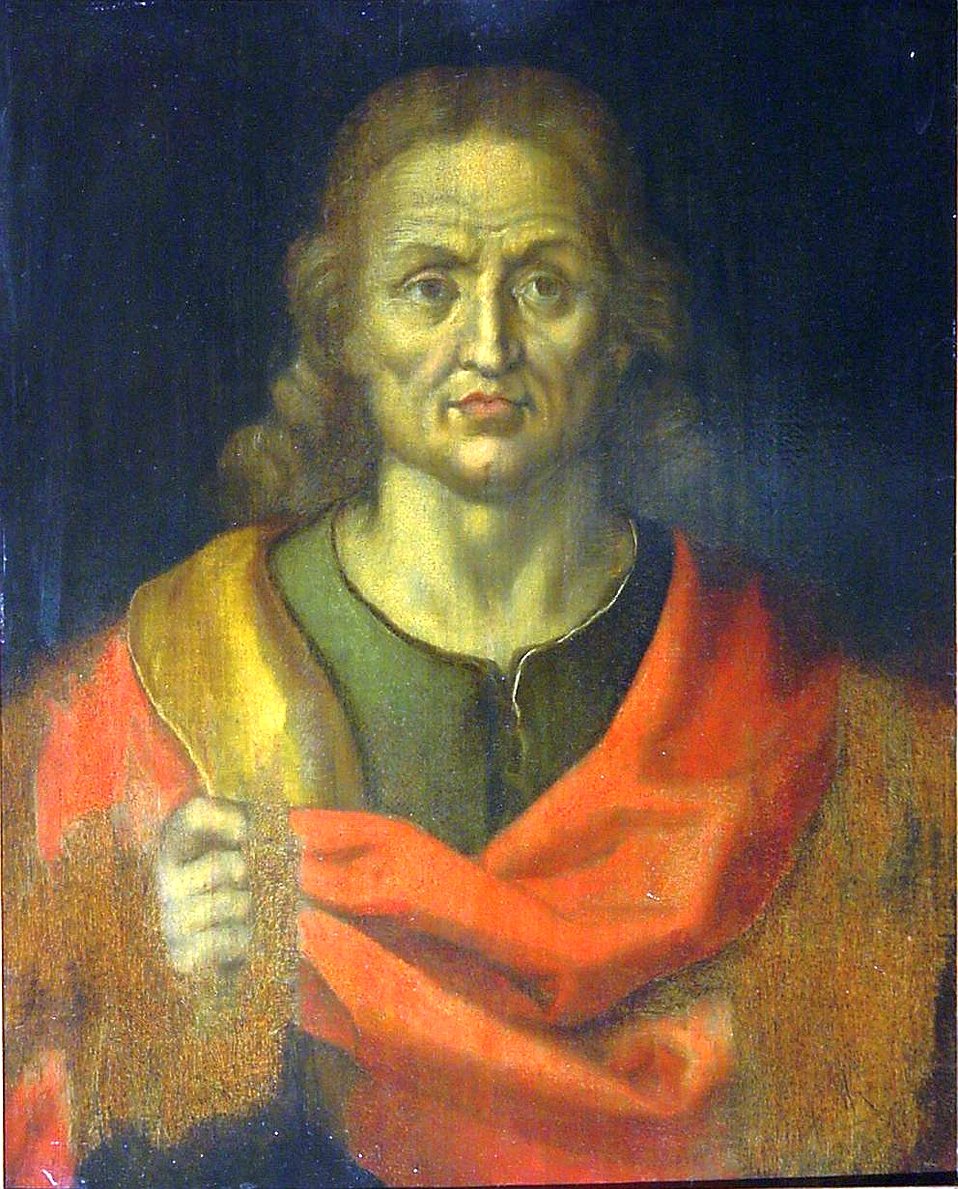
Albrecht dürer salvator mundi